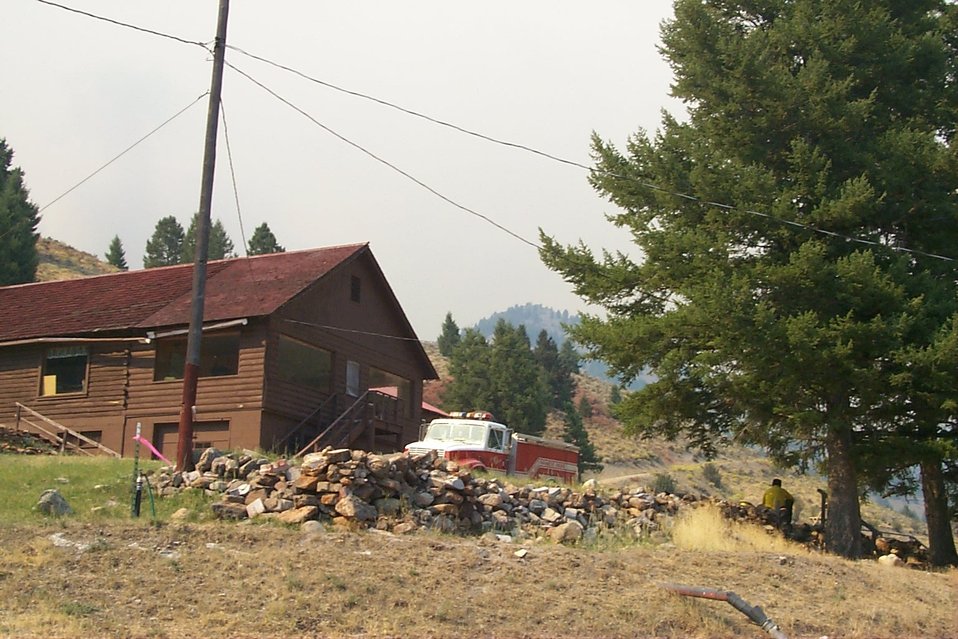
Urban interface Fire Clearwater Fire Salmon Field Office USRD Upper Snake River District